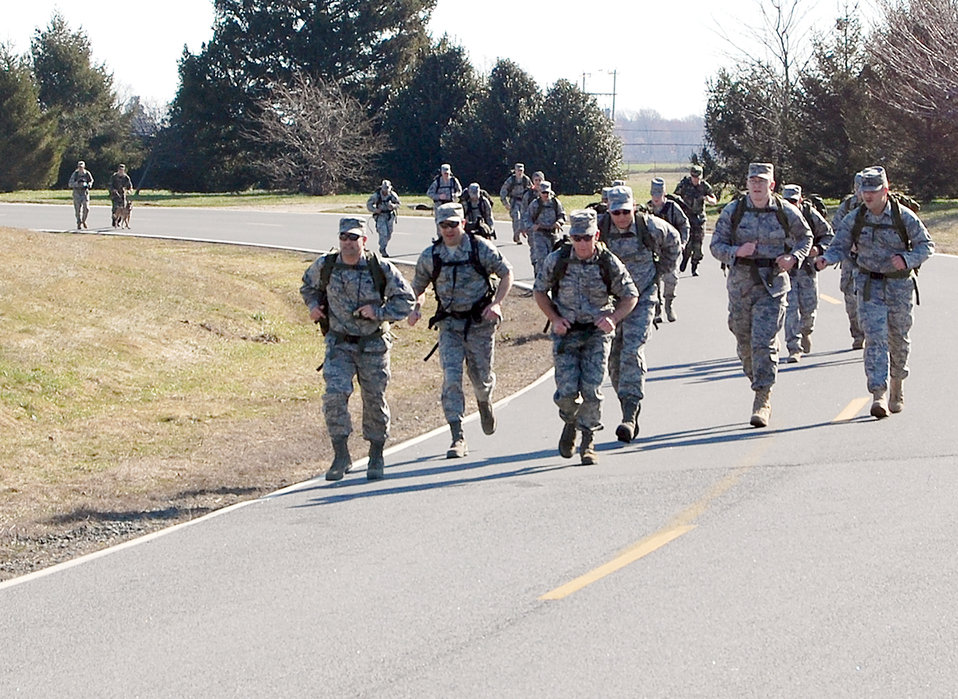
Airmen participate in ruck march

Members from the Air Force Mortuary Affairs Operations Center here participate in the 436th Security Forces Squadron's 11th Annual Ruck March held March 20, 2010, at Dover Air Force Base, Del. The annual 6.2-mile march is a fundraiser to honor the veterans of the Korean War who fought in the Battle of the Chosin Reservoir.